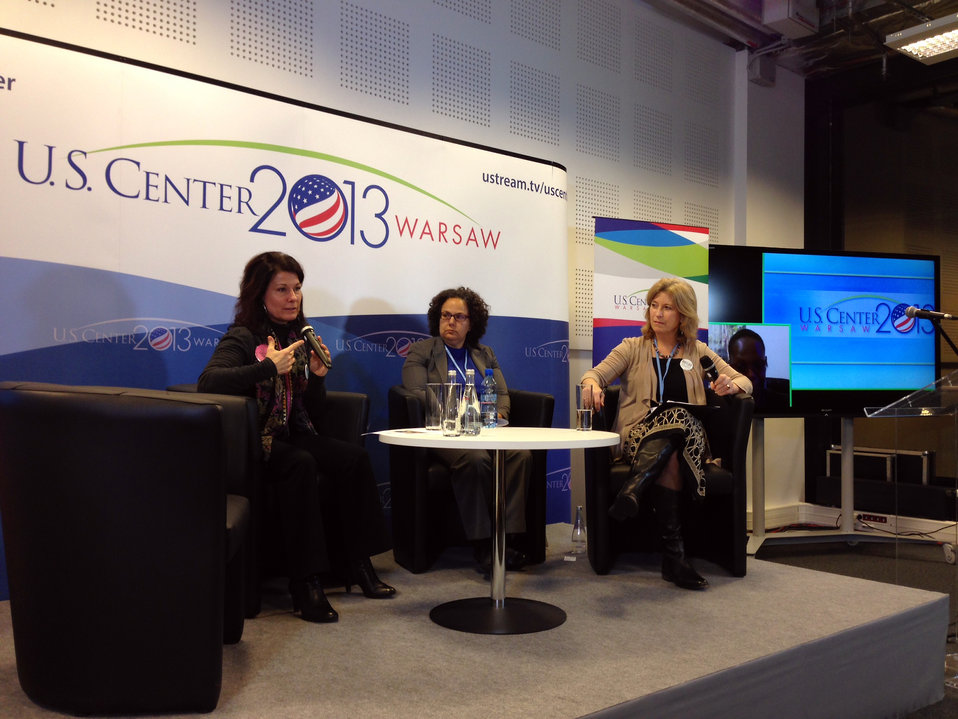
A Panel Discussion on Rewards and Challenges for Women Addressing Climate Change

Representatives from the U.S. Department of Energy discuss the 'Rewards and Challenges for Women Addressing Climate Change' at the U.S. Center at the 19th Session of the Conference of the Parties to the UN Framework Convention on Climate Change (COP19) in Warsaw, Poland, on November 19, 2013.